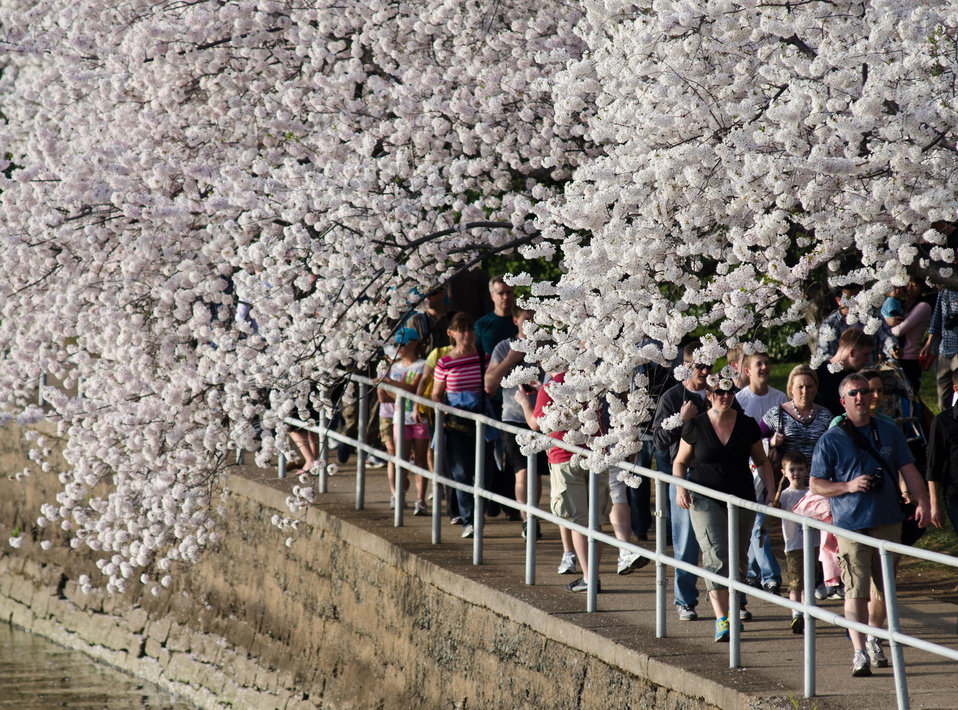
Cherry blossoms at the Tidal Basin in Washington, D.C., on Tuesday, March 20, 2012.